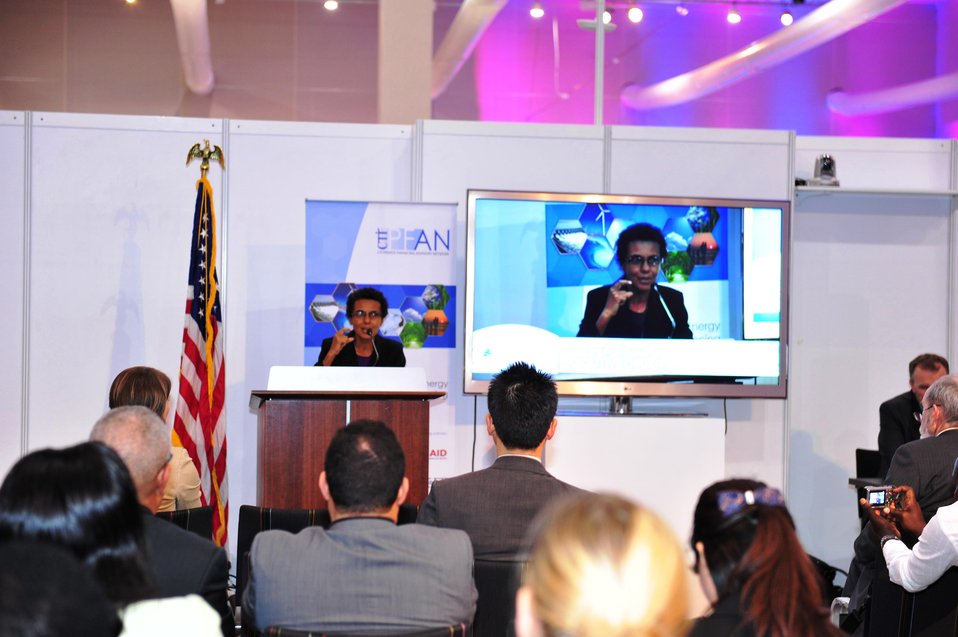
A U.S. Government Leader Presents at the U.S. Center

A U.S. Government leader highlights key climate programs and scientific research during her presentation at the U.S. Center at the 18th Session of the Conference of the Parties to the UN Framework Convention on Climate Change (COP-18) in Doha, Qatar, November 26, 2012.